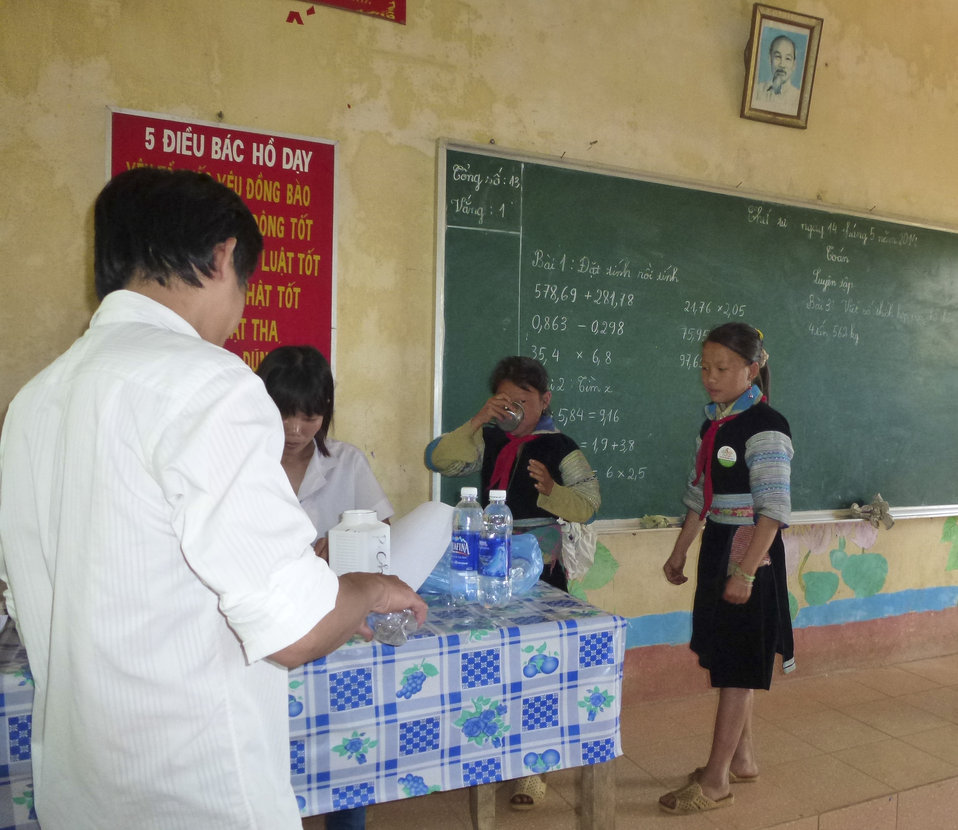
USAID supports deworming medication for school children in Bat Xat district of Lao Cai province

May 14, 2014.